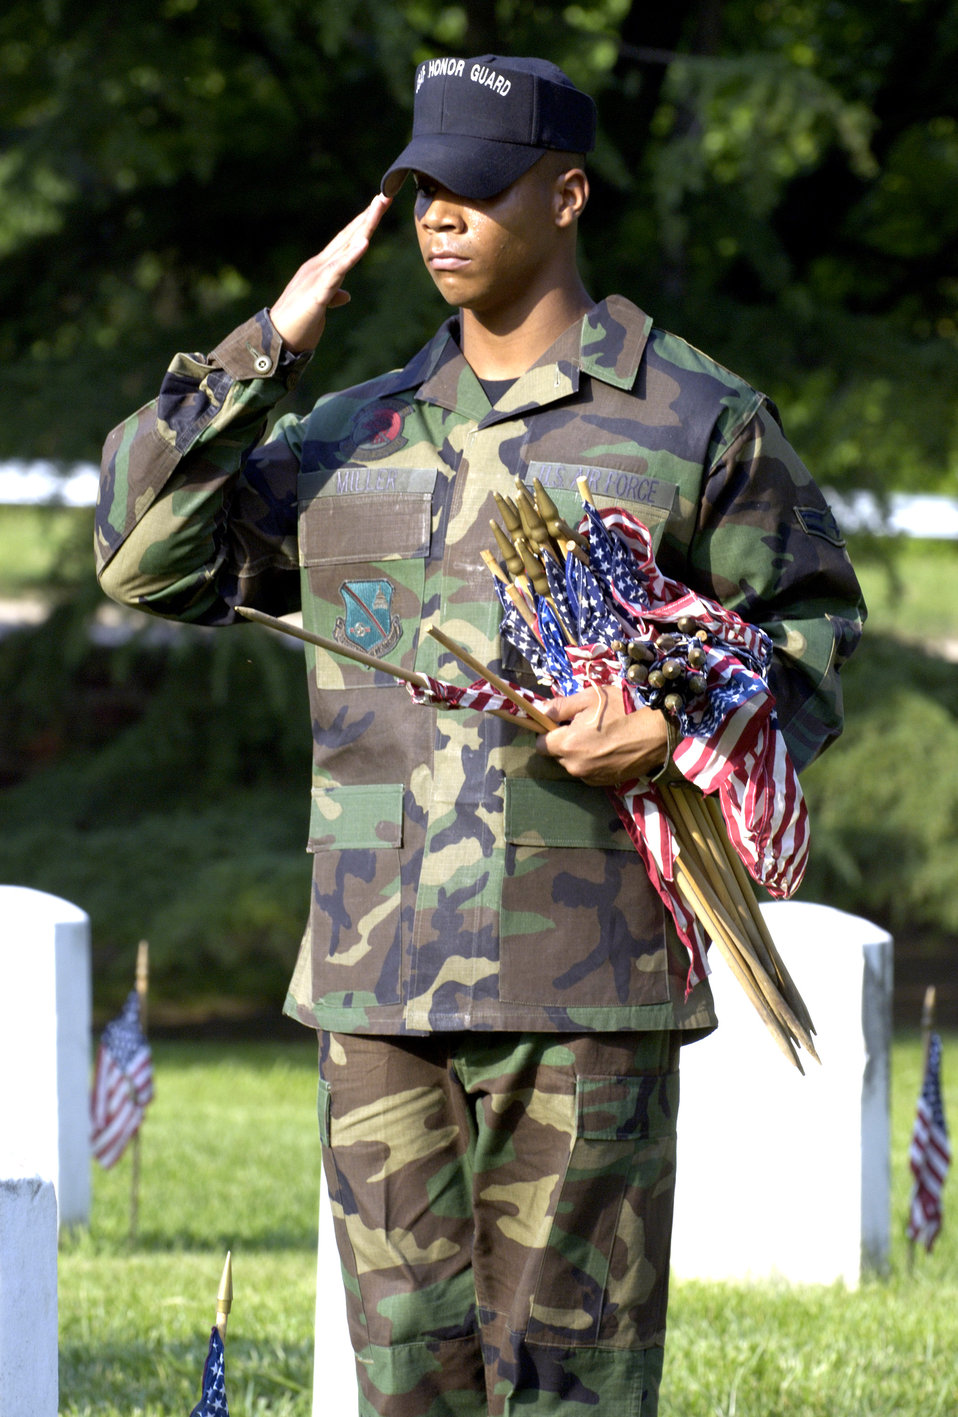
In remembrance

Airman 1st Class Darrell Miller renders honors after placing a flag in front of a headstone at Arlington National Cemetery on Thursday, May 25, 2006. Airman Miller is assigned to Bolling Air Force Base, Washington D.C., and is a member of the United States Air Force Honor Guard Drill Team. He joined hundreds of Soldiers, Sailors, Airmen and Marines from across the Washington D.C. area to place more than 227,000 flags at the front of headstones. The flags will remain at the headstones through Memorial Day.